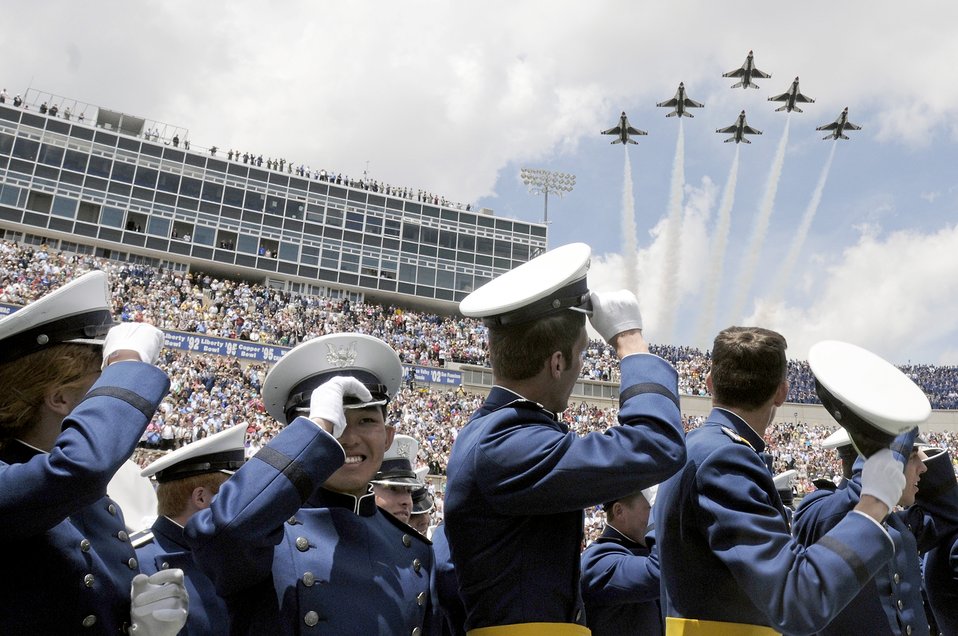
Joint Chiefs chairman delivers Academy commencement

The Thunderbirds fly over as 1001 U.S. Air Force Academy cadets are commissioned as second lieutenants at the close of the class of 2010 graduation ceremony May 26, 2010, at the Academy in Colo.